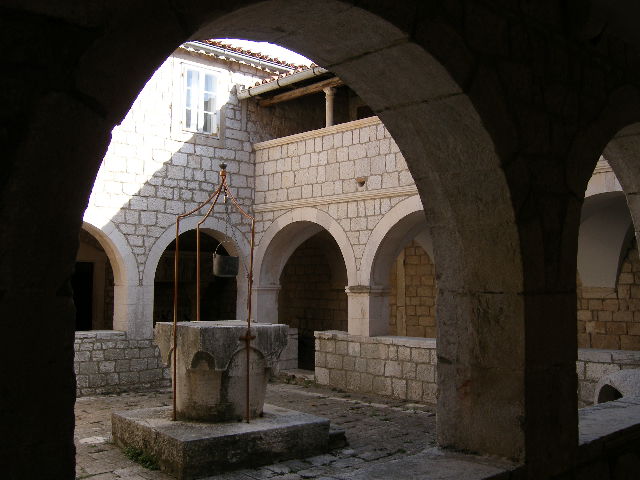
S. Eufemia monastry (Kampor, island of Rab).